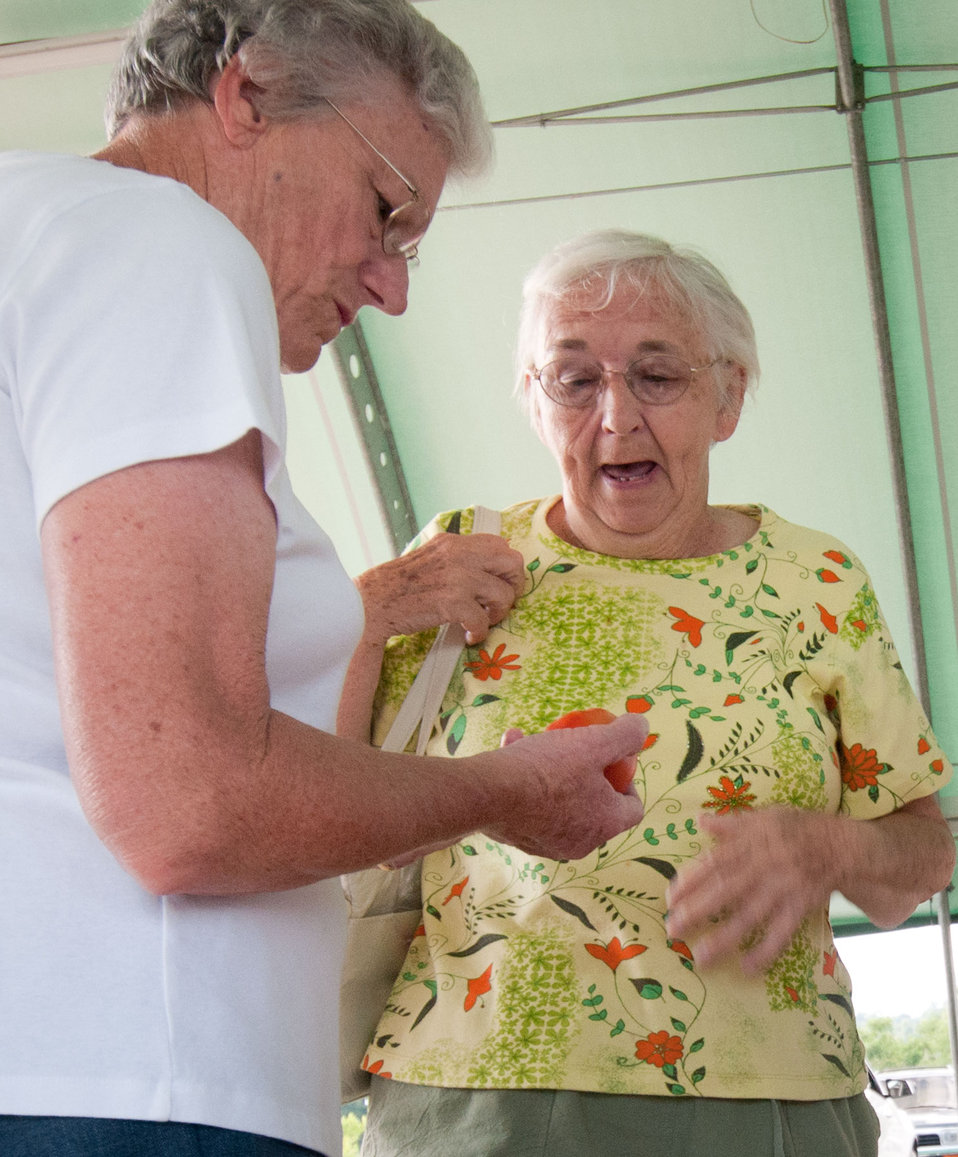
Vendors are happy to let customers take as long as they like to choose their heirloom tomato's at the Bath County Agricultural Education and Marketing Center, Owingsville, KY, on Friday, July 15, 2011. The Center was the recipient of a $400,000 Rural Business Enterprise Grant. It has given farmers and producers from Bath and surrounding counties the opportunity to manufacture and market their locally grown and locally produced value-added and “Kentucky Proud” branded products, including but not limited to, fresh produce, artisan crafts and specialty food products. The Center is open year-round and allow residents to sell products in four different retail categories, including Kentucky products, regional crafts, “green” groceries and bakery/deli. Several producers expressed their gratitude for Rural Development’s assistance in making the center a reality. The project was made possible through funding the American Recovery and Reinvestment Act of 2009 enacted by the 111th United States Congress in February 2009 and signed into law on February 17, 2009, by President Barack Obama.